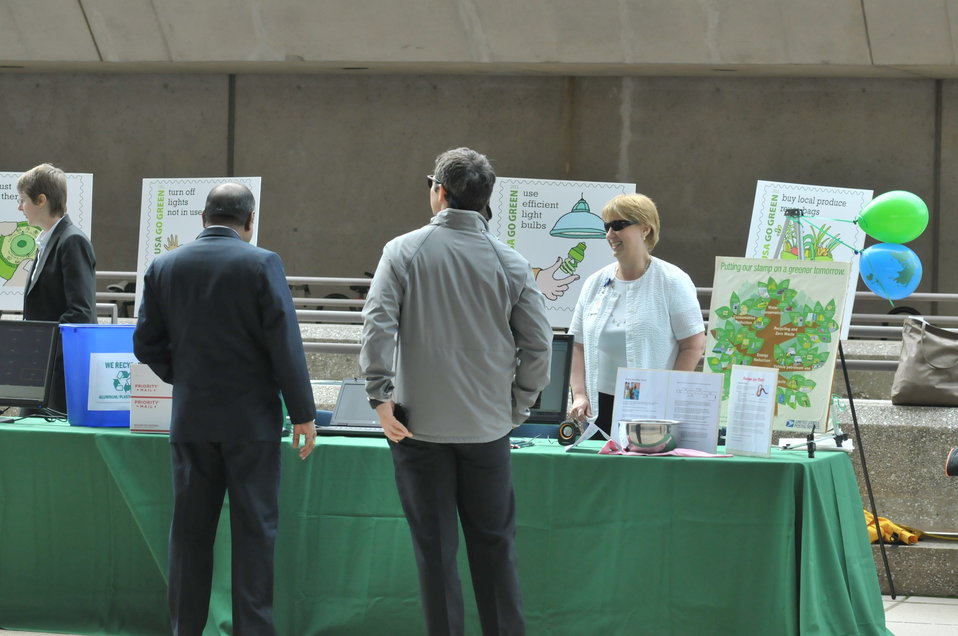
U.S Postal Services introduces a new Global: Sea Surface temperatures forever stamp at the Earth Day program at Department of Energy on April 22, 2014.